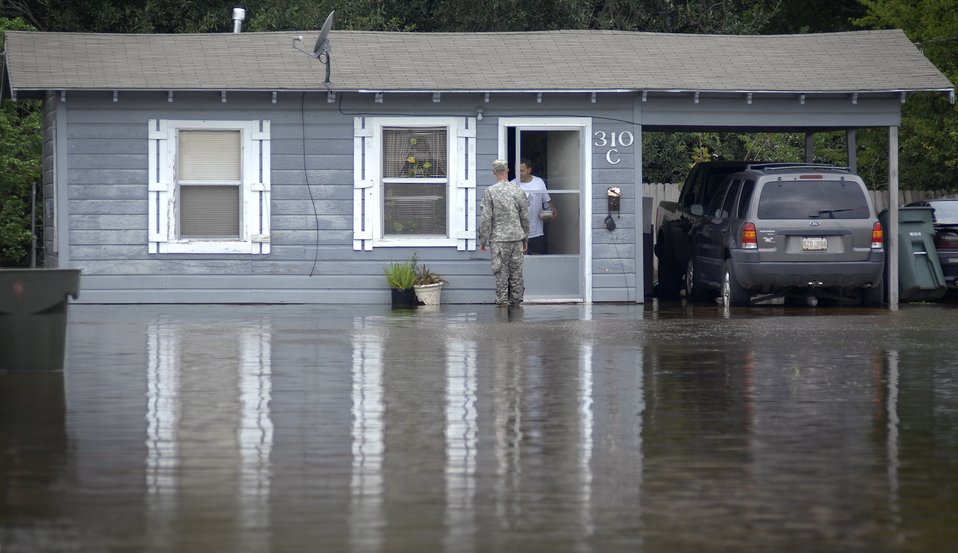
Watchful Eye

Army Sgt. Josoph Simpson goes door-to-door during a high-water rescue mission in order to make sure residents of Lake Charles, La., affected by the flood water are safe after Hurricane Ike Sept. 13. Sgt. Simpson is assigned to Bravo Company, 3rd Battalion, 156th Infantry of the Louisiana Army National Guard.